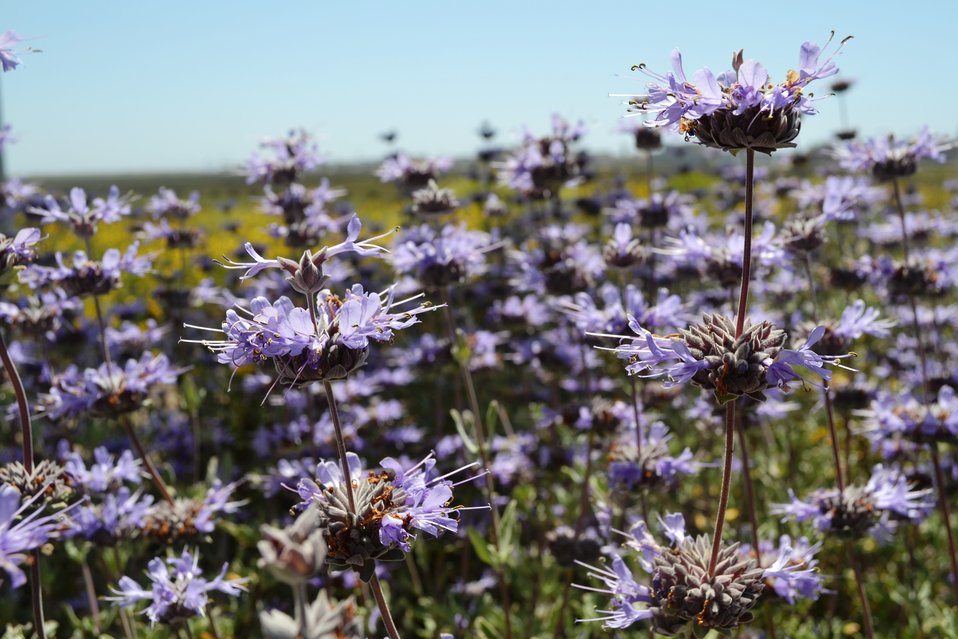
Cleveland sage (Salvia clevelandii)

A bee's-eye-view, taken at the Visitor Center on Tijuana Slough NWR, looking southwest toward the ocean.